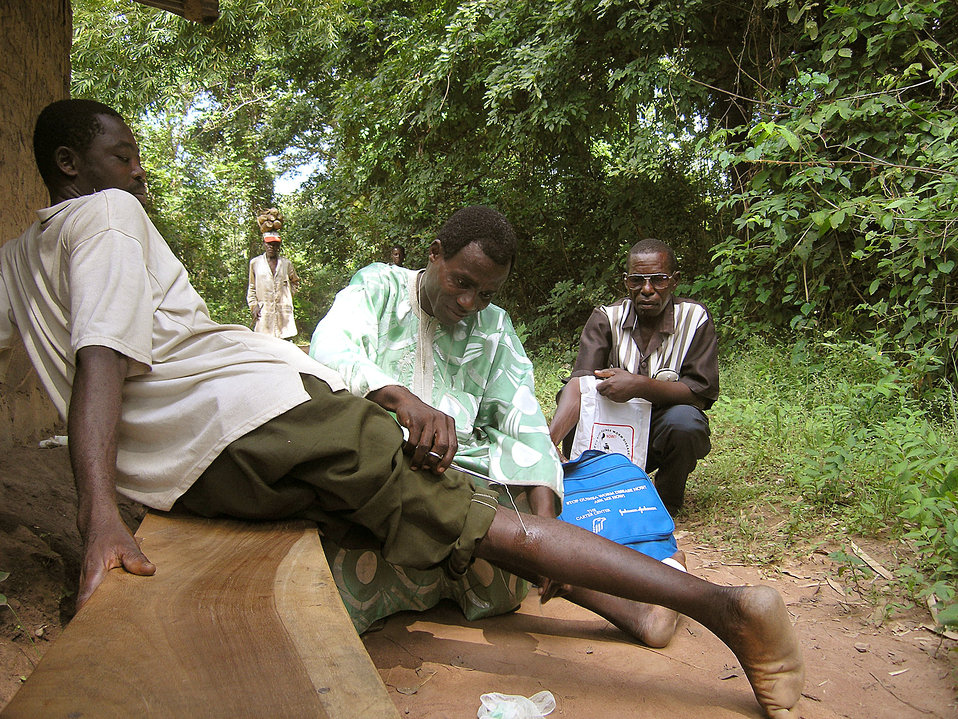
This photograph depicts a Nigerian man having a Guinea worm, Dracunculus medinensis, extracted from his right lower leg. The roundworm has emerged from its subcutaneous burrow just distal to the popliteal fossa, or posterior knee region. The worm has migrated, over a period of approximately one year, to its site of emergence to release its eggs in a local pond or stream. Before the worm emerges, a blister develops on the skin, causing a very painful burning sensation before rupturing within 24 - 72 hours. Once the white, spaghetti-like worm emerges from the wound, it is pulled out only a few centimeters each day, and wrapped around a small stick or piece of gauze. Sometimes a worm can be pulled out completely within a few days, but this painful process often takes weeks.